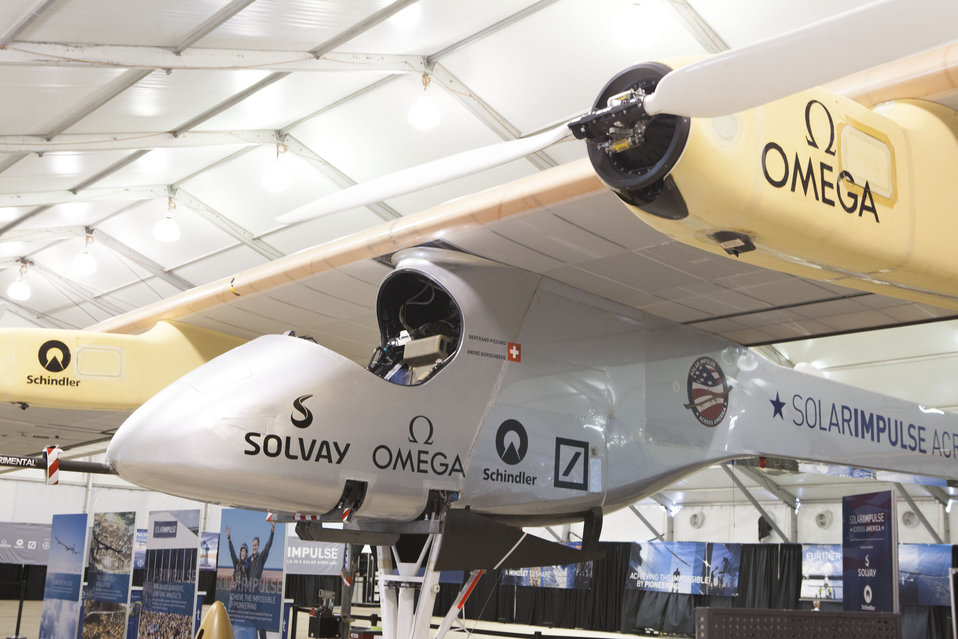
Solar Plane Lands in D.C.

The solar-powered plane boasts a wingspan of 208 feet, but weighs about as much as the average car. The plane took off from Cincinnati, Ohio, on June 15 and arrived in Washington, D.C., on June 16.